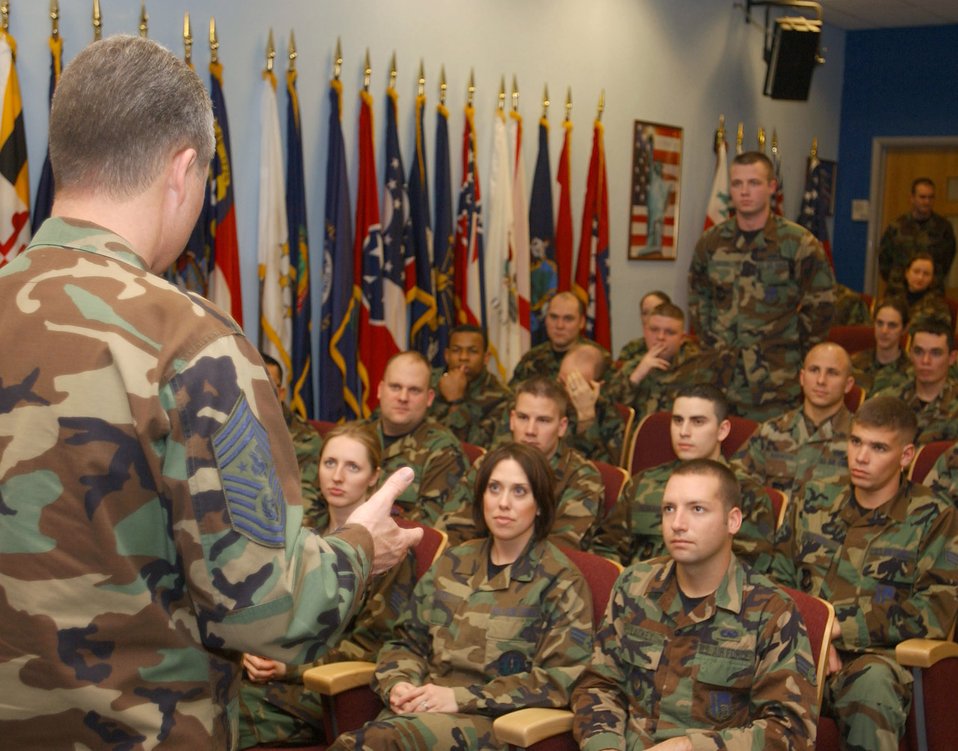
Chief visit

Chief Master Sgt. of the Air Force Gerald R. Murray speaks to Airmen attending the Mathies Airman Leadership School during his visit to RAF Lakenheath, United Kingdom, Friday, March 10, 2006. He spoke to the Class 2006-D Airmen about mentorship, force shaping and the steady increases in military pay compared to the civilian environment.